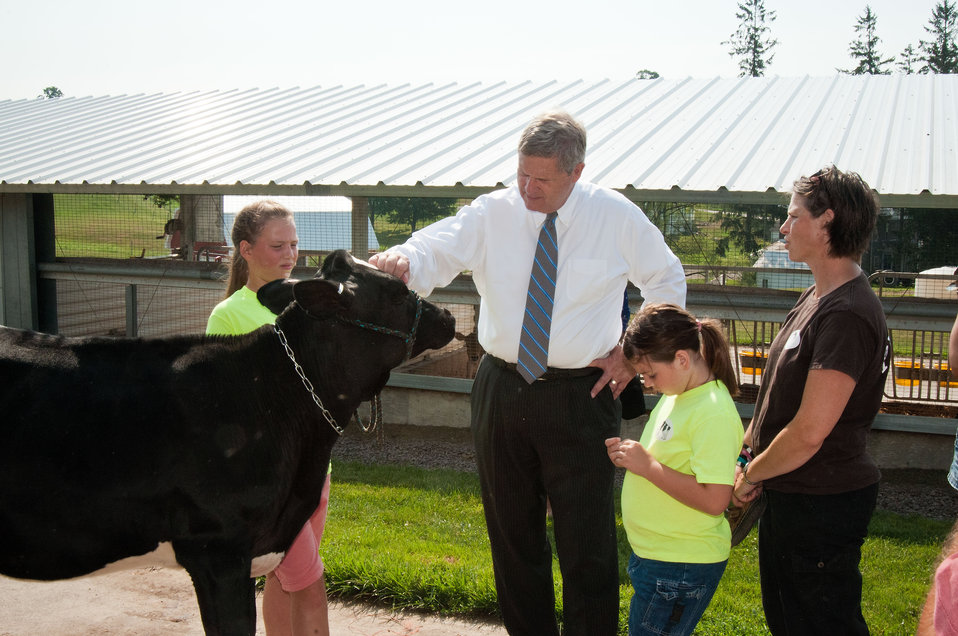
From left: Elizabeth Stoltzfus, “Durasell” a December calf, Abby Stoltzfus and Andrea Stoltzfus discuss the finer points of rearing a calf with Agriculture Secretary Tom Vilsack who participates in a charity event-auctioning cattle and was interested in some expert advice from Elizabeth. Secretary Vilsack toured the Stolzfus's farm in Berlin, PA on Tuesday, July 17, 2012. During his visit Secretary Vilsack highlighted the U.S. Department of Agriculture’s (USDA) energy efficiency programs and announced a new effort to help rural consumers make affordable, energy-efficient improvements to their homes and businesses. Pennwood Dairy Farms uses an anaerobic digester to produce energy for the dairy. An anaerobic digester is a component of a waste management system that captures biogas for energy production. The digester is also part of a planned conservation management system that manages manure as a comprehensive nutrient management system.